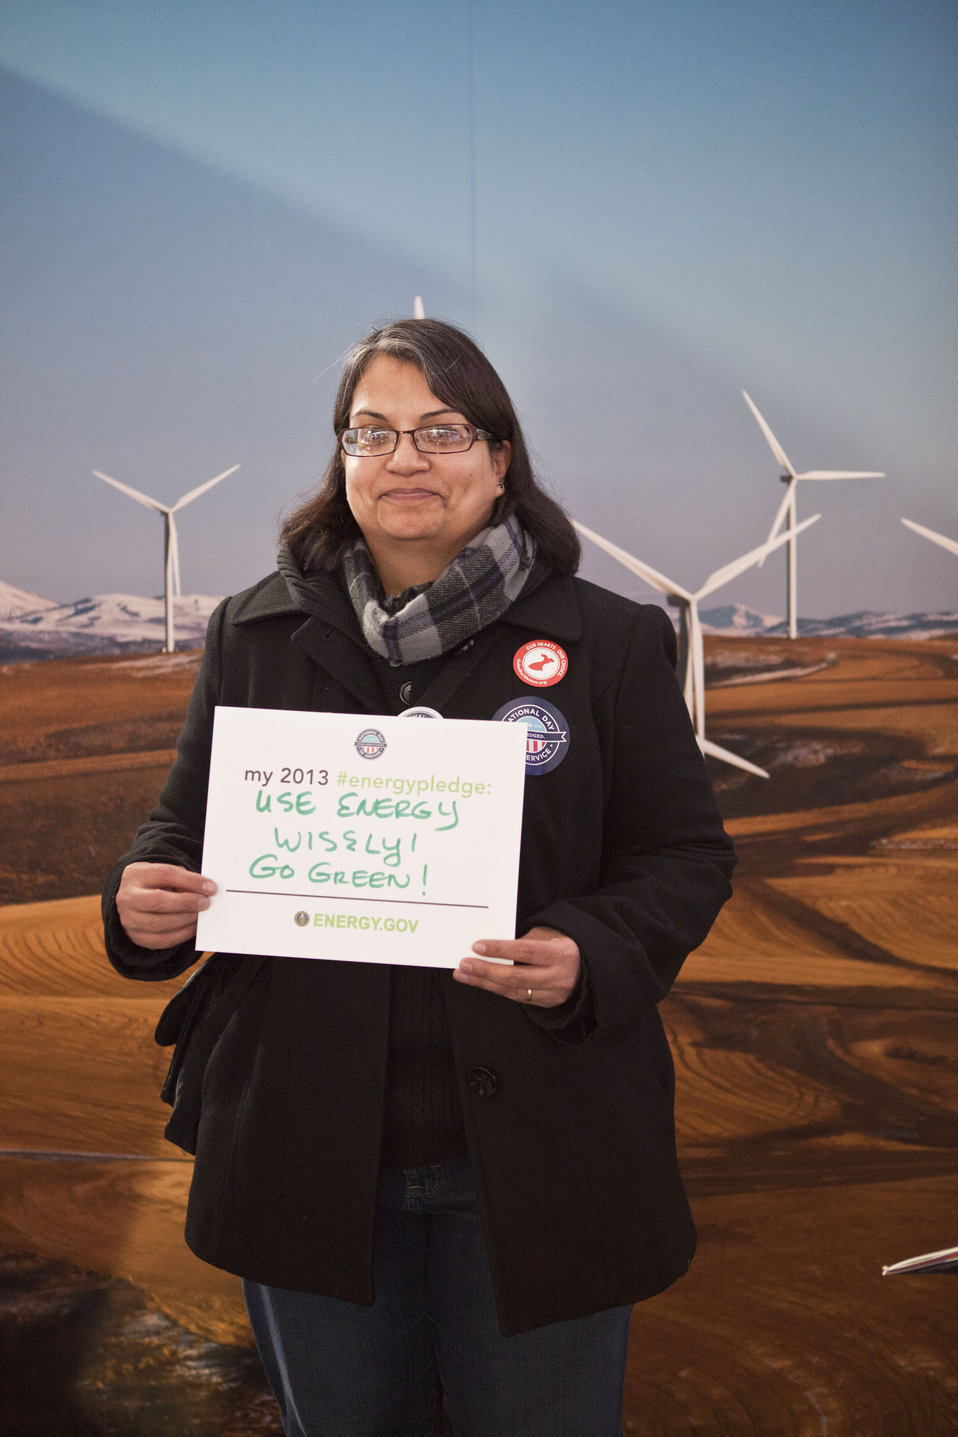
What's your #energypledge?